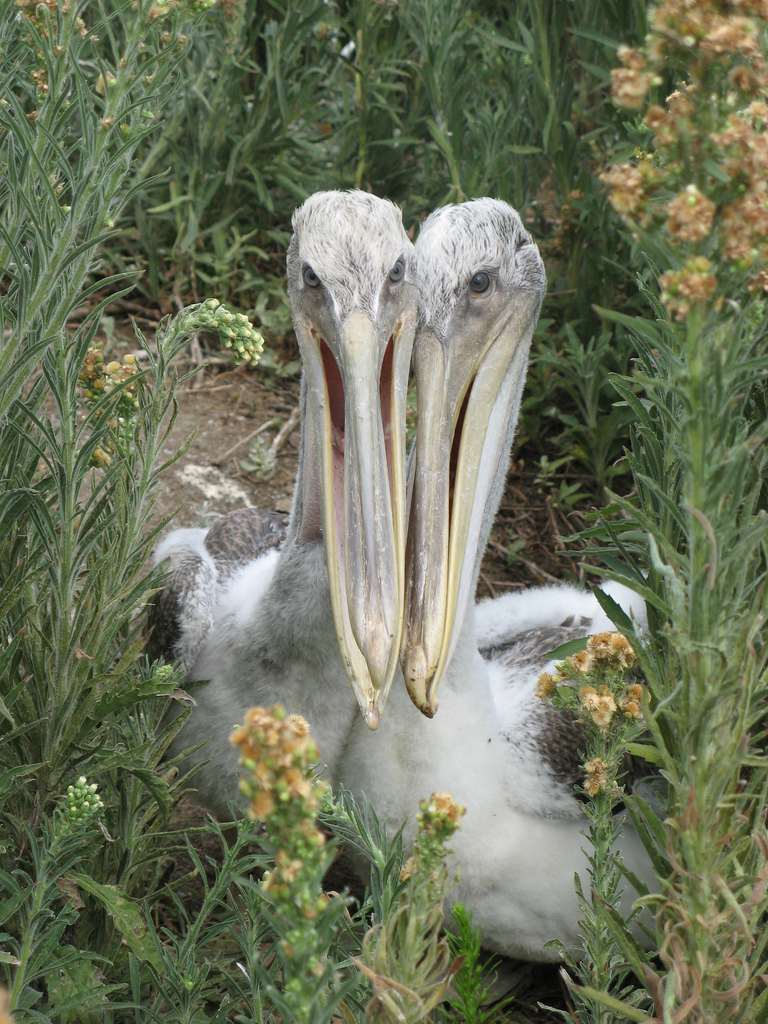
Pelican pair Credit: Catherine Hibbard, USFWS